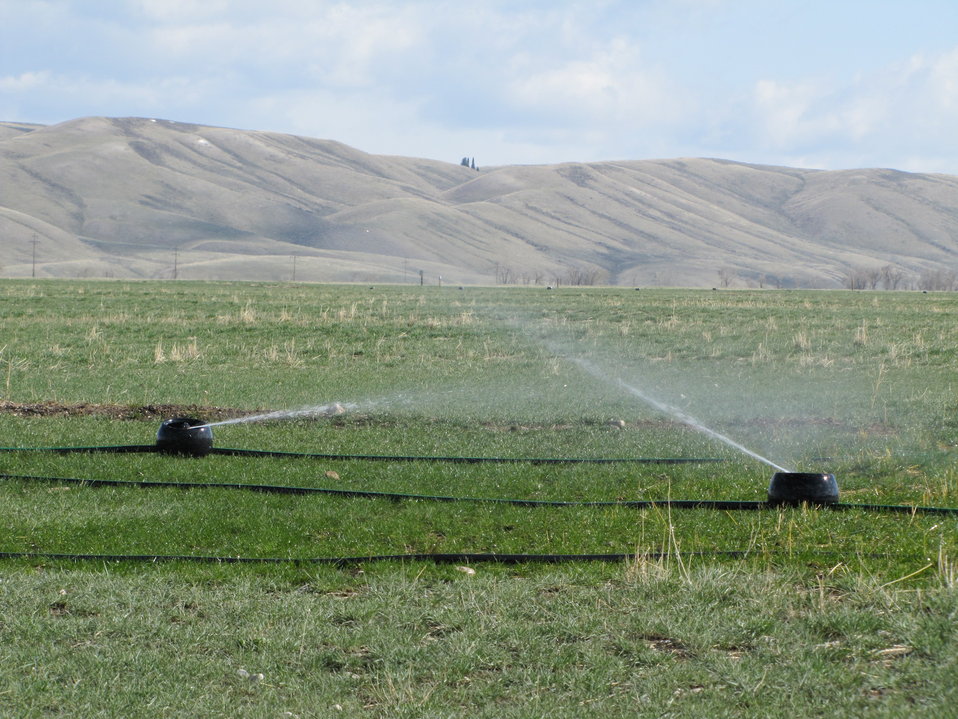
A Close-Up of K-Line Pods

Water is released from portable polyethylene sprinkler pods during irrigation. Thirteen pods are attached to each K-Line, which can be conveniently moved from one irrigation area to another through the use of a utility terrain vehicle (UTV).